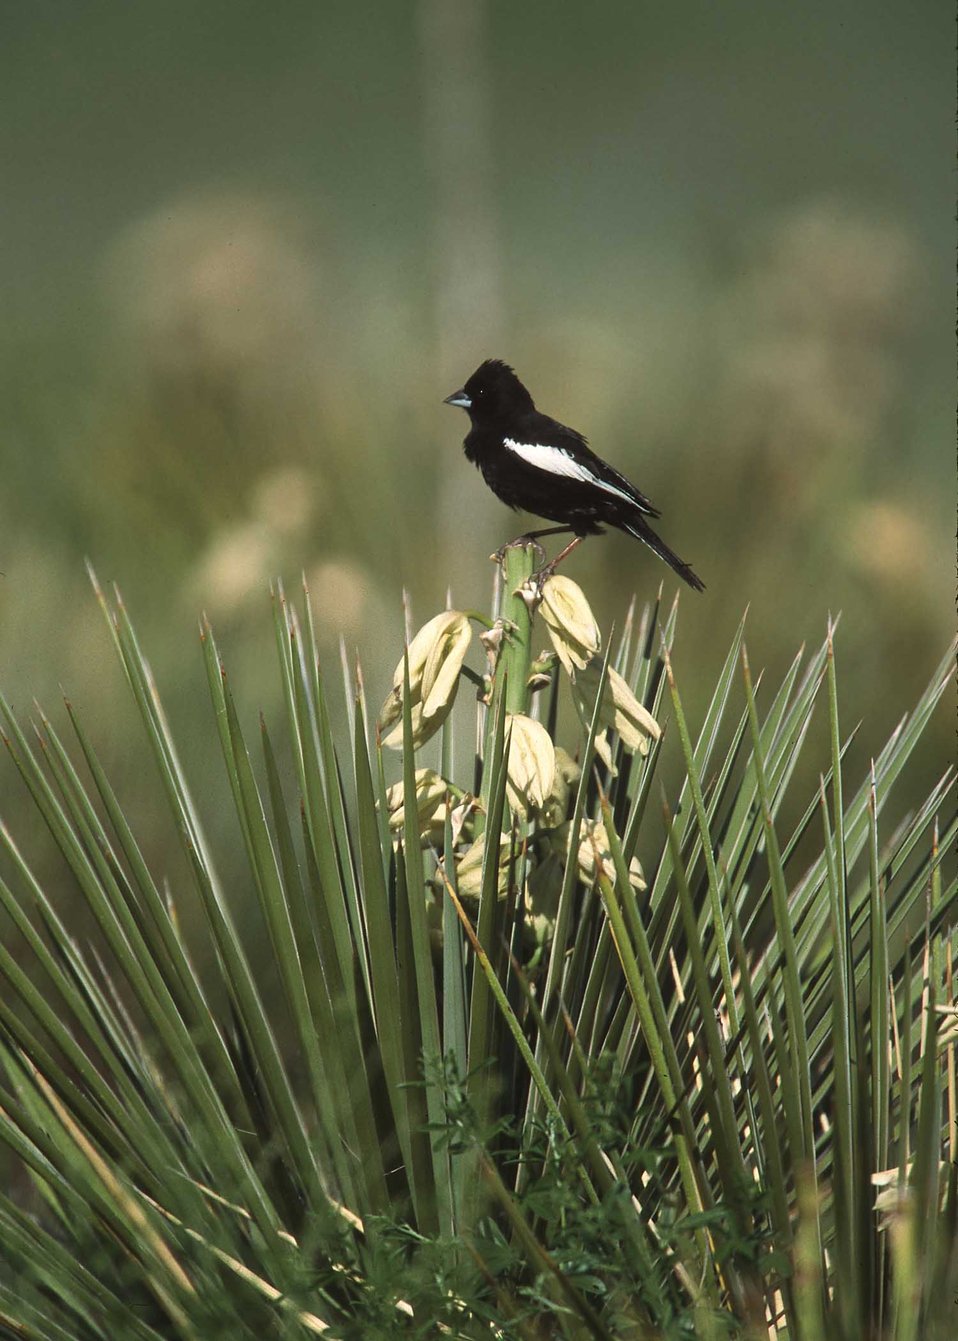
Lark Bunting on Spanish Bayonette (Cholla).